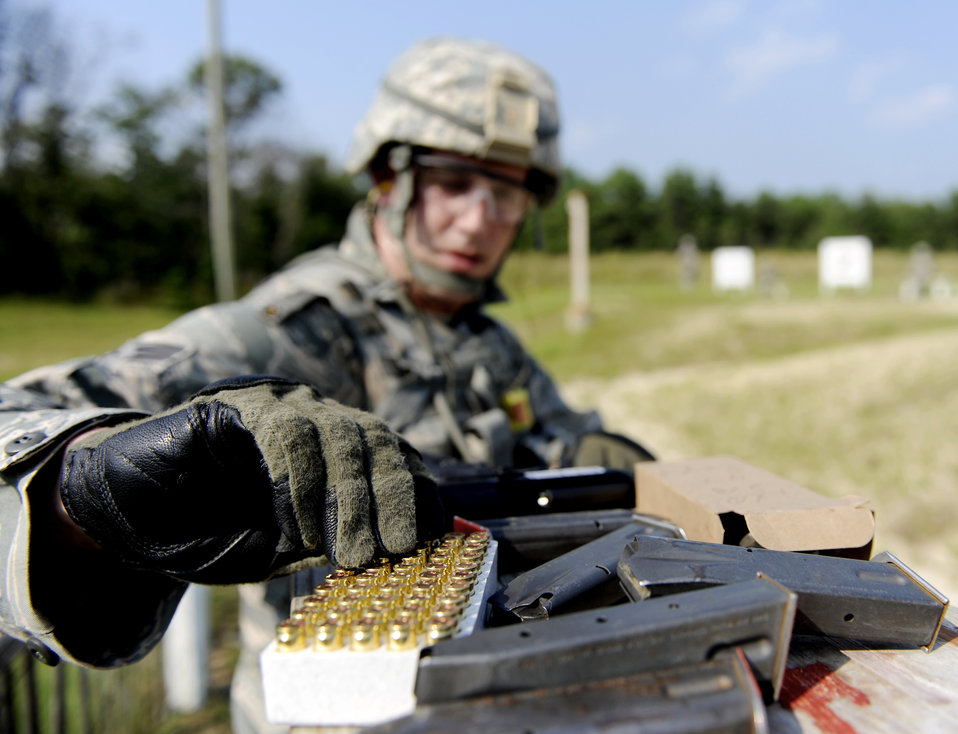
Airmen prepare for deployment

Staff Sgt. Anthony Howell loads his ammunition before going to the firing line during 9mm familiarization training Aug. 10 at Fort Dix, N.J. Combat Skills Training is a month-long Army training program that prepares Airmen for Joint Expeditionary Tasking combat roles augmenting the U.S. Army in support of operations Enduring and Iraqi Freedom. The sergeant is a fuels resource controller assigned to the 78th Logistics Readiness Squadron at Robins Air Force Base, Ga.